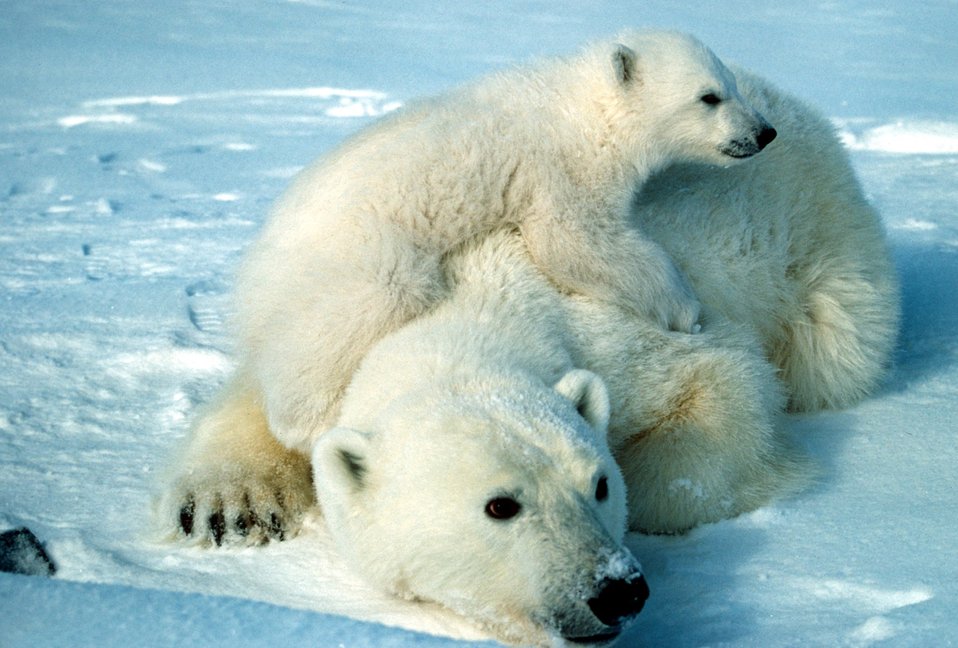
#34 - Breaking News!

Countdown to CoP16: The United Kingdom (UK) has announced that it will support a U.S. proposal to list polar bears in CITES Appendix I, prohibiting international trade for primarily commercial purposes. The UK's support is fantastic news! But, it's still important to gain support of other European Union (EU) countries. At CoP16, the 27 member states of the EU vote as a bloc, based on a collective position. The UK will advocate for the U.S. proposal for polar bears as the EU negotiates its collective position. Now, the question is--which EU country will be the next to announce its support?

Read the full story: bit.ly/Viz21W

Polar bear. Taken by Scott Schliebe/USFWS, 2000.